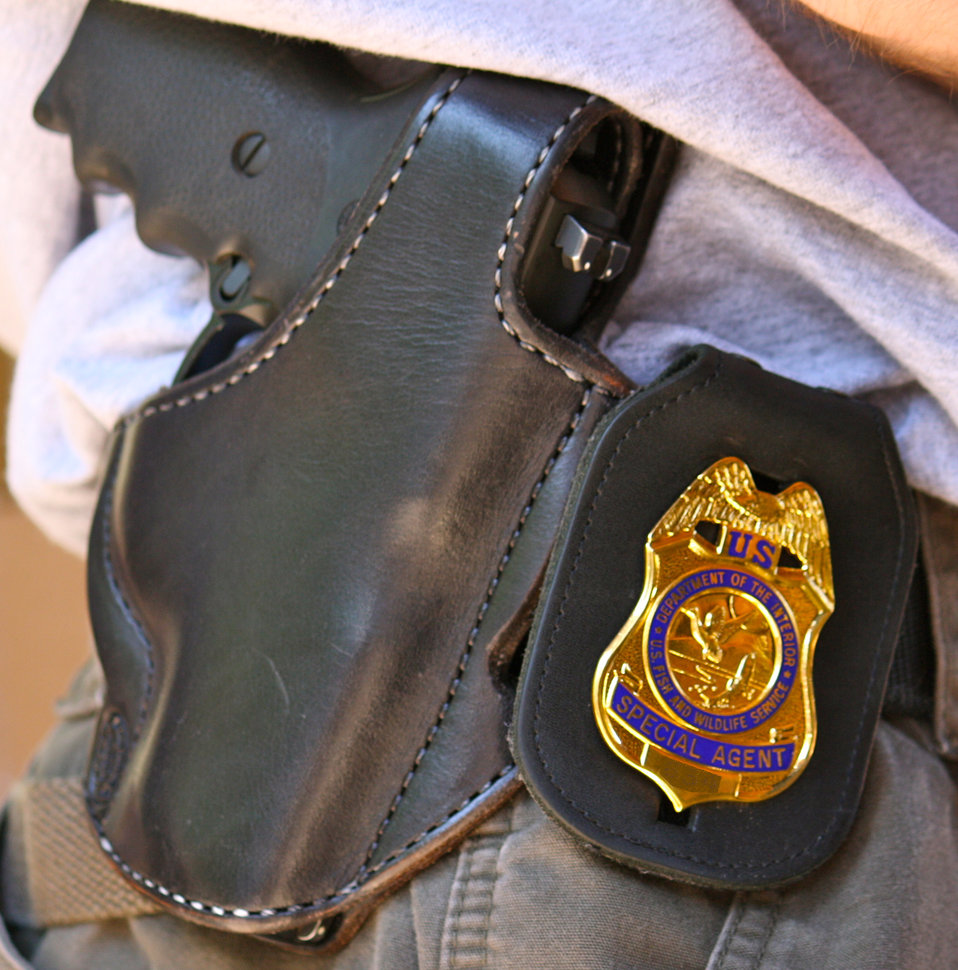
Badge and Sidearm

Law Enforcement target practice at outdoor shooting range in Glastonbury, CT.